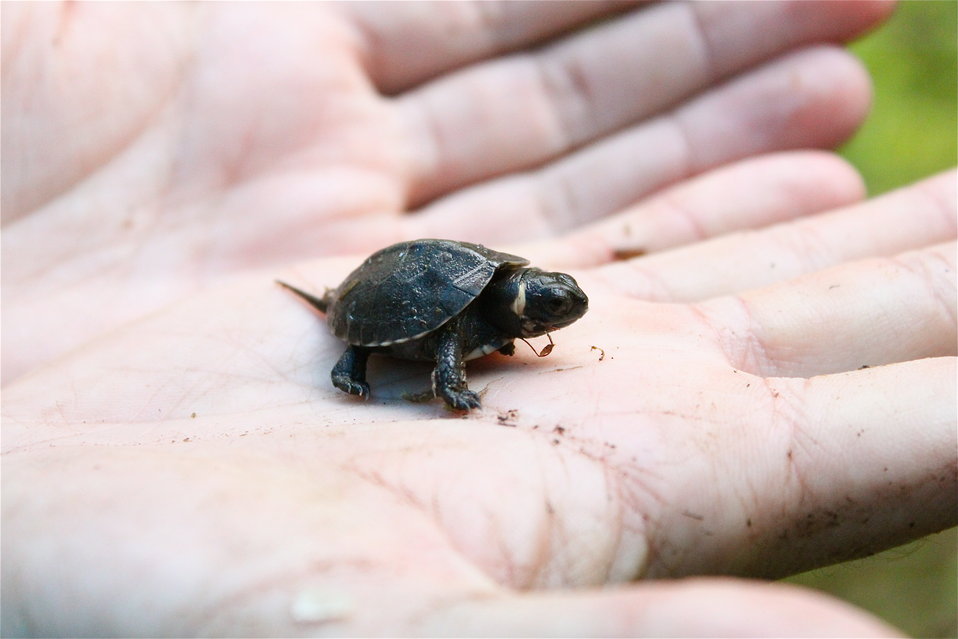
Newly hatched bog turtle

A newly hatched bog turtle in northern New Jersey.

Credit: Rosie Walunas/USFWS

The bog turtle was federally listed as a threatened species in 1997. The greatest threats to the bog turtle are the loss, degradation, and fragmentation of its habitat from wetland alteration, development, pollution, invasive species, and natural vegetational succession. The species is also threatened by collection for illegal wildlife trade.